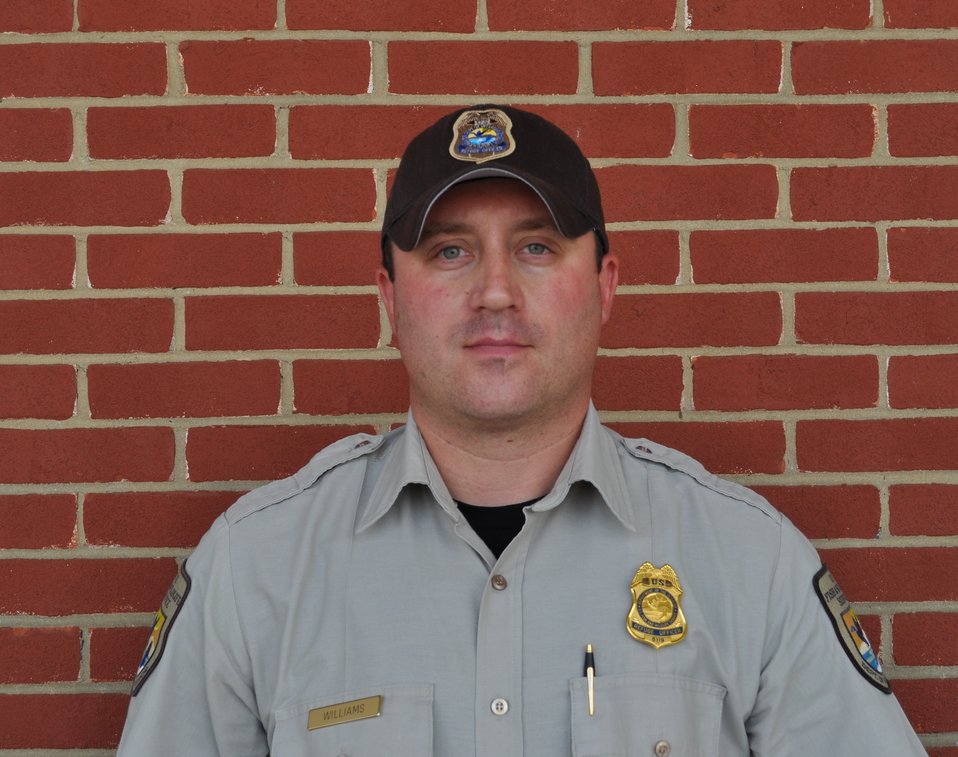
Gareth Williams closeup

National Wildlife Refuge System Law Enforcement Officer Gareth Williams saved a life by investigating a matter in northern Virginia. Williams was named 2011 Officer of the Year for the U.S. Fish and Wildlife Service’s Northeast Region. (USFWS)